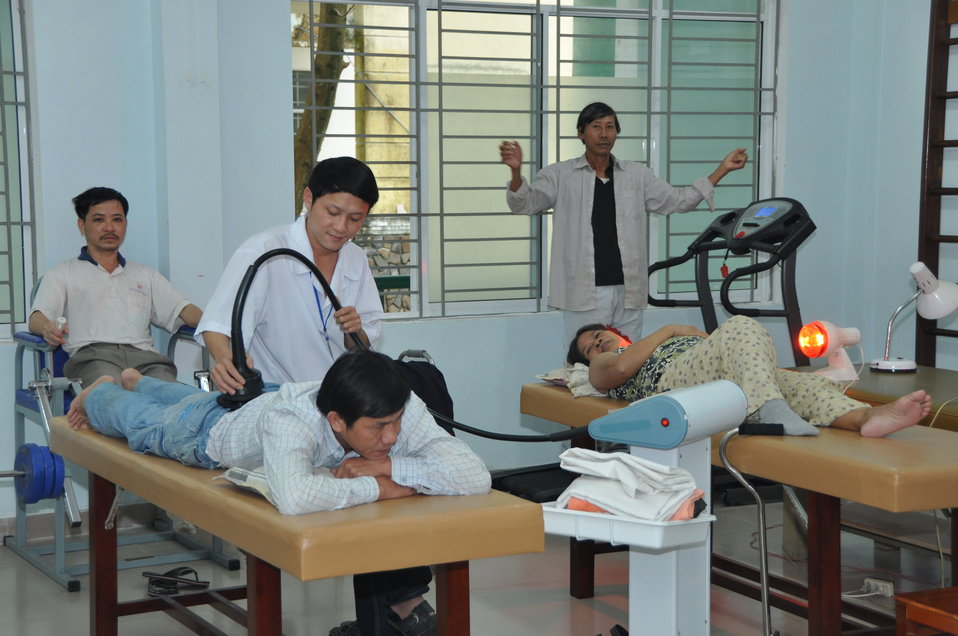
USAID support to Thanh Khe District Hospital

USAID-supported equipment and training help the staff at Thanh Khe District Hospital to meet the physical therapy needs of the disabled population of Danang.